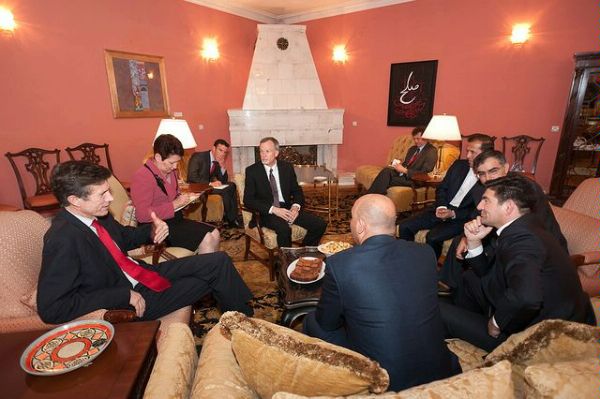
Ambassador Gross Holds a Discussion for Assistant Secretary Blake and Editors of Tajikistan's Major Newspapers

U.S. Ambassador to Tajikistan Ken Gross hosts a discussion at his residence for Assistant Secretary of State for South and Central Asian Affairs Robert O. Blake and editors of Tajikistan's major newspapers to learn about the state of media freedom in Tajikistan on April 12, 2011, in Dushanbe, Tajikistan.